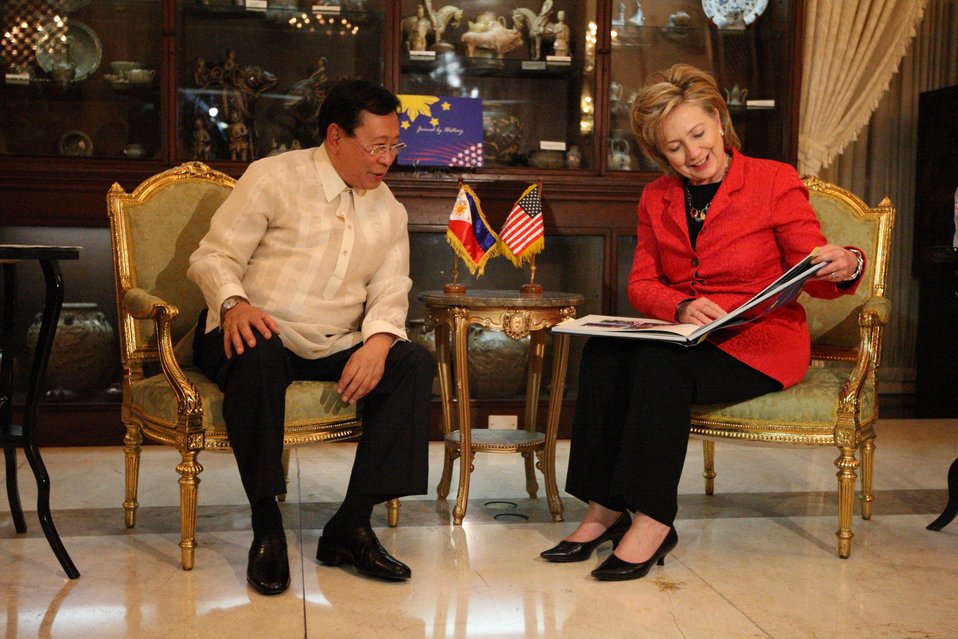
Secretary Clinton With Philippine Secretary of Foreign Affairs Alberto Romulo

U.S. Secretary of State Hillary Rodham Clinton, right, speaks with Philippine Secretary of Foreign Affairs Alberto Romulo inside the Goldenberg Mansion at the Malacanang Palace compound, Manila, Philippines, February 12, 2010.